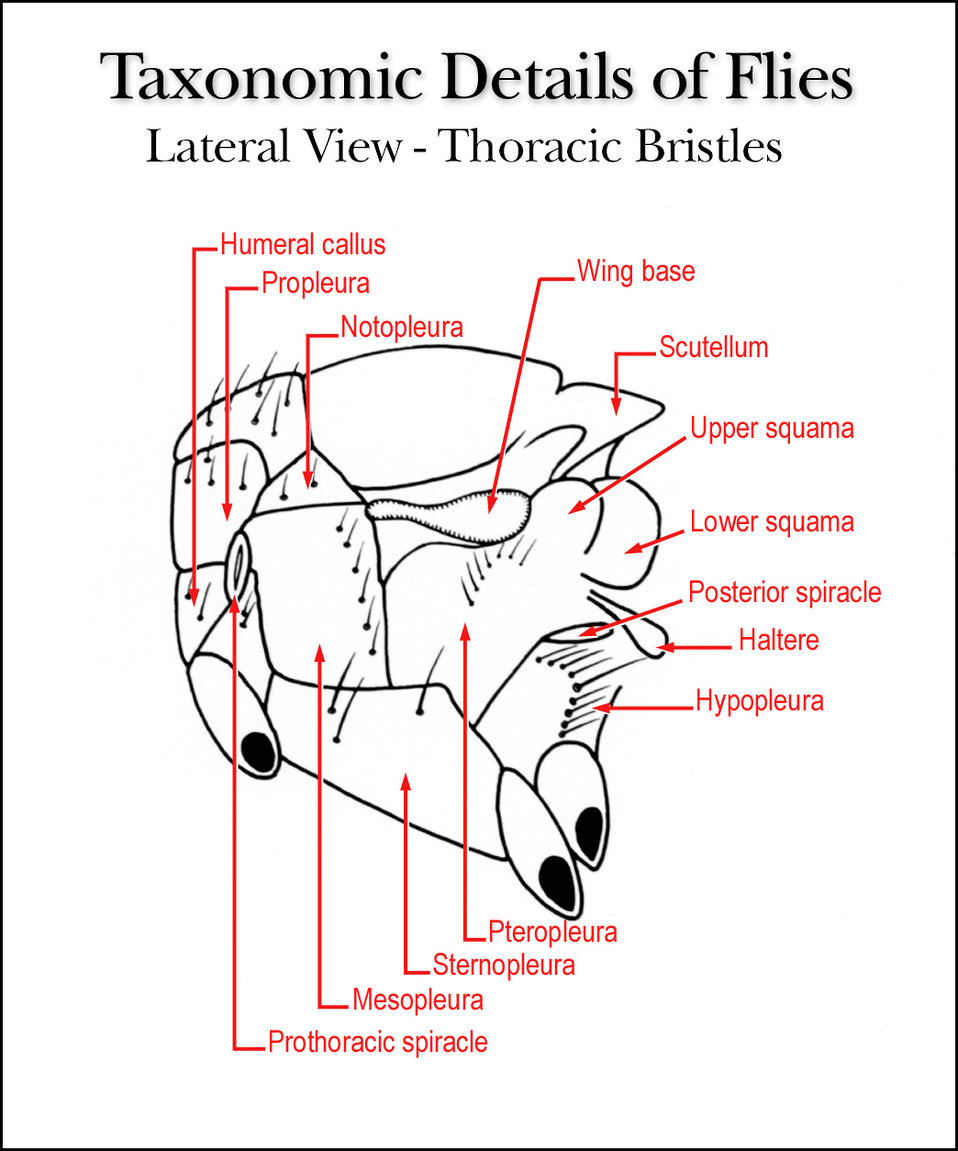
This illustration shows the lateral view of a fly's thorax comprised of thoracic exoskeletal plates and bristles.